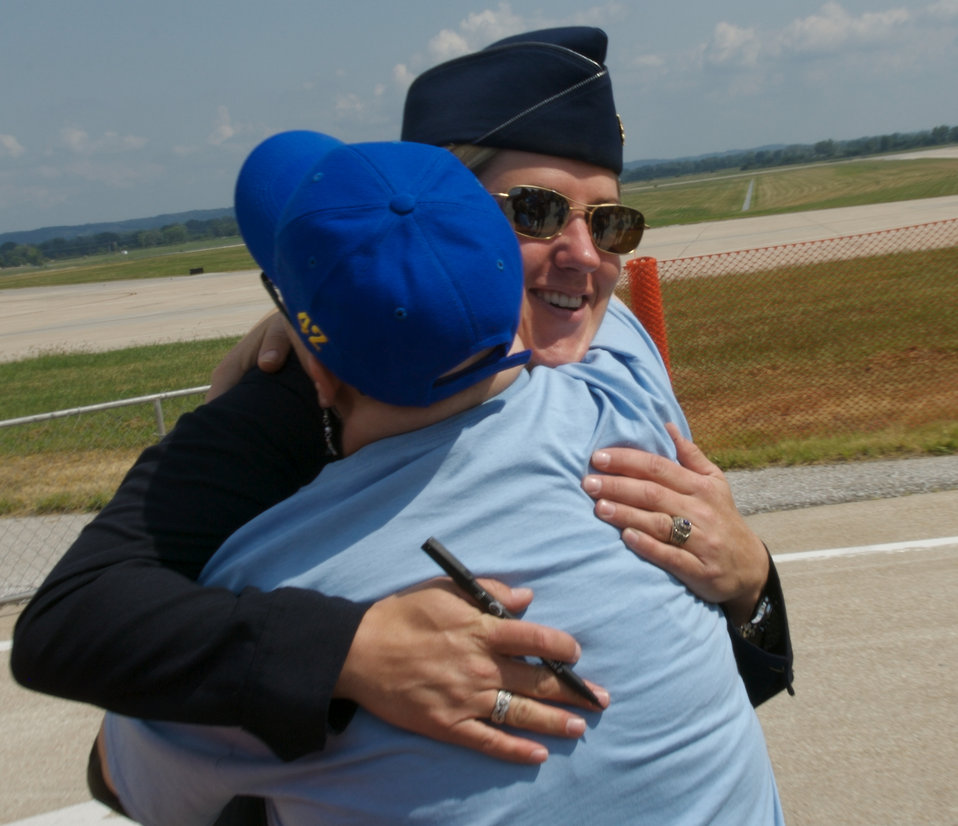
Offutt Airmen hold airshow

Maj. Samantha Weeks provides more than an autograph when a fan gives her a hug during a special needs airshow Aug. 15 at Offutt Air Force Base, Neb. Major Weeks is with the Air Force Demonstration Squadron,